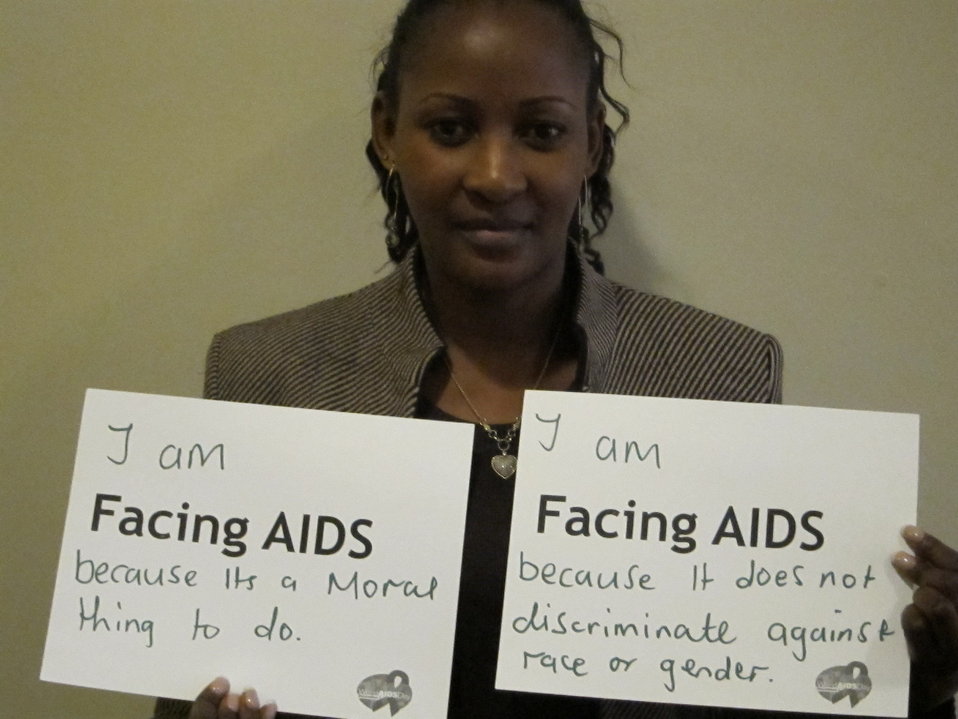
I am Facing AIDS because it's a moral thing to do. I am facing AIDS because it does not discrimiate against race or gender.